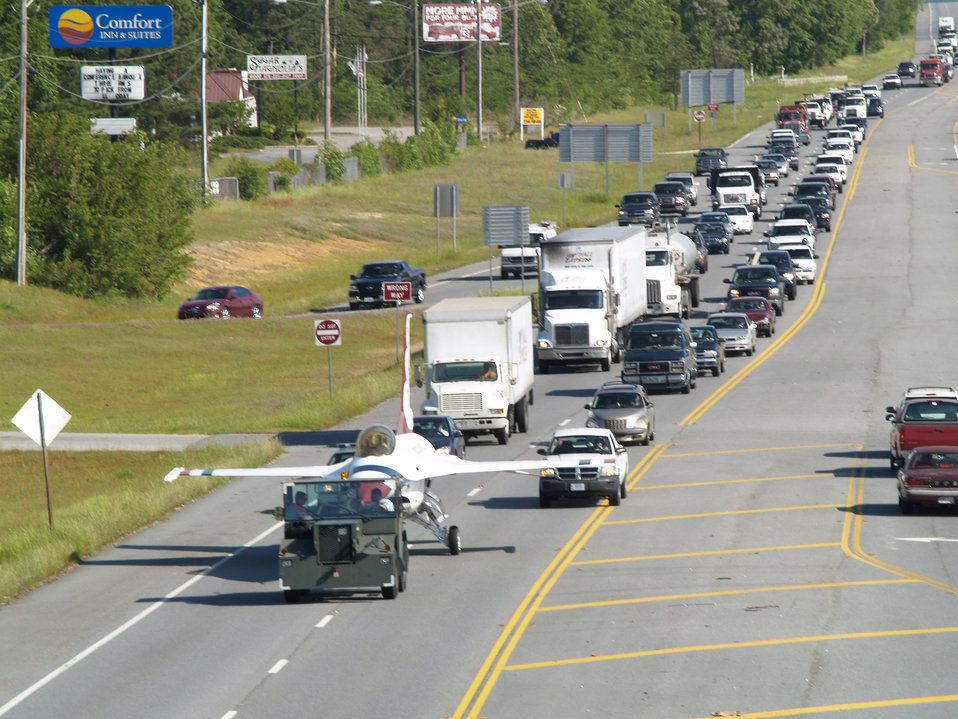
Museum opens Thunderbirds F-16 aircraft exhibit

An F-16 Fighting Falcon painted in the Thunderbirds aerial demonstration team paint scheme makes its way to the Museum of Aviation April 29 in Warner-Robins, Ga.